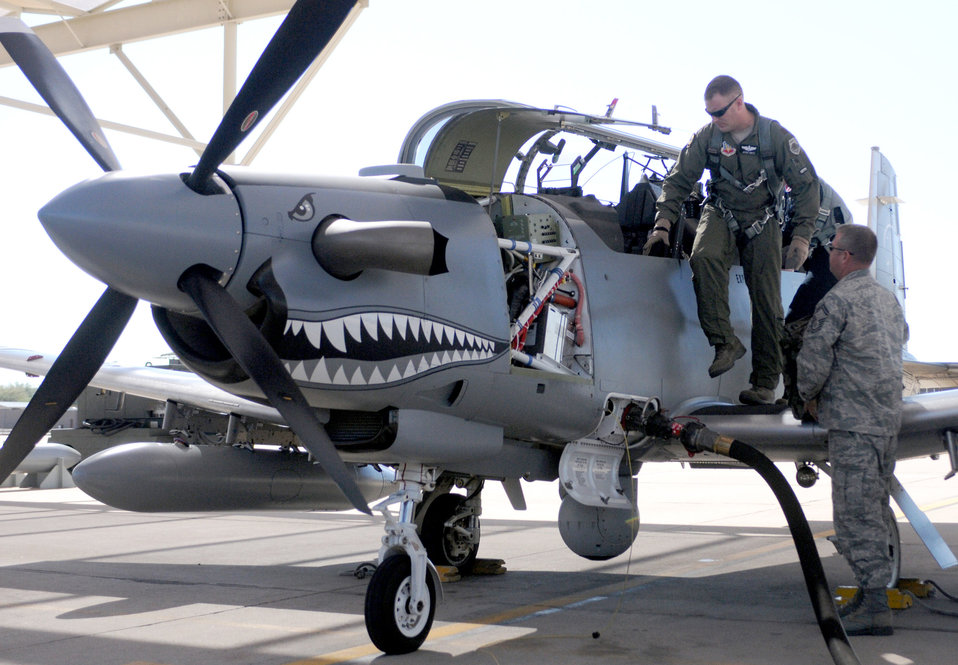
Light-attack aircraft

Maj. Jesse Smith exits a Hawker Beechcraft AT-6C after testing the light-attack aircraft's ability to perform a combat search and rescue mission Oct. 7, 2010, at Davis-Monthan Air Force Base, Ariz. Major Smith is one of several pilots invited by the Air National Guard Air Force Reserve Command Test Center to fly the experimental airplane this month and provide recommendations for improving its capability. Major Smith is an A-10 pilot from the 422nd Test and Evaluation Squadron at Nellis Air Force Base, Nev.